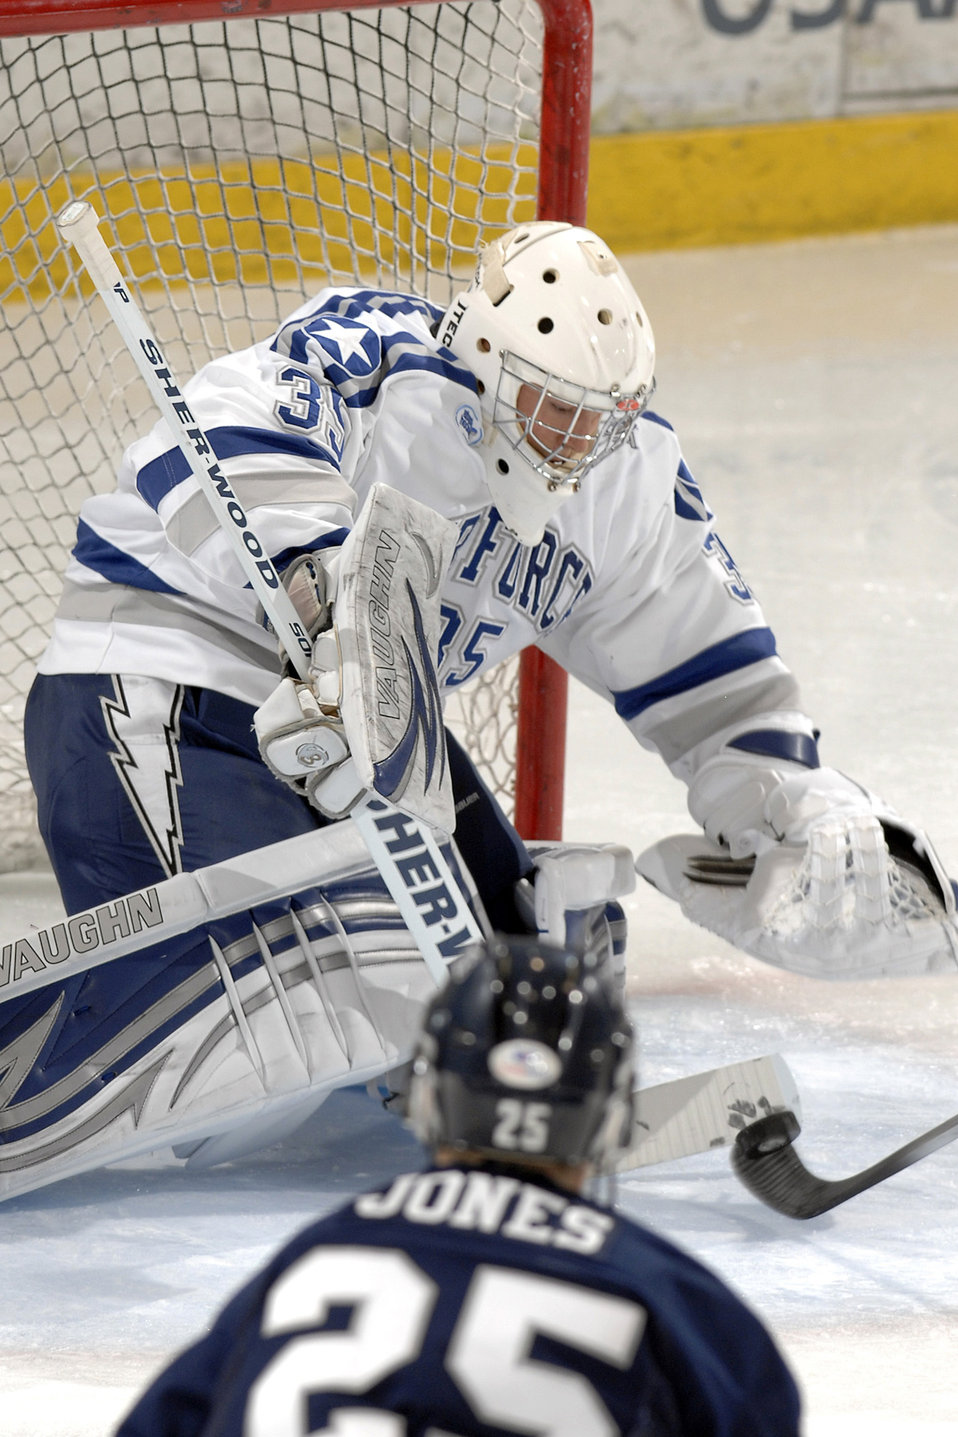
Falcons defeat the Pronghorns

Air Force Academy sophomore David Bosner stops a shot during a hockey exhibition game against the University of Lethbridge from Alberta, Canada, Oct. 4, 2010, at the Academy's Cadet Ice Arena in Colorado Springs, Colo. Bosner played the first 30 minutes, making nine saves and did not allow a goal as the Falcons defeated the Pronghorns 4-3 in overtime.